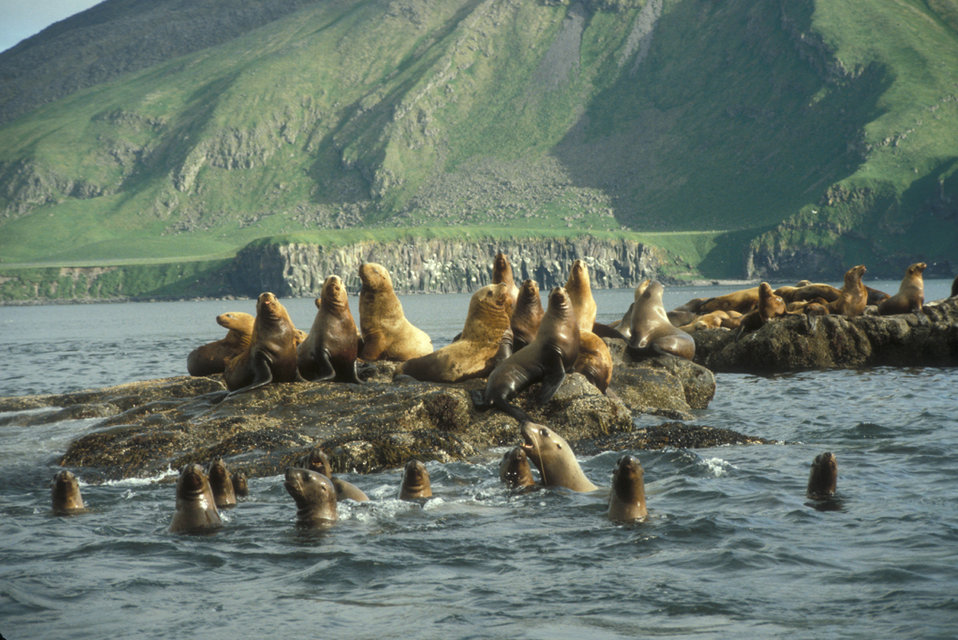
Sea Lion

Amak Island Steller sea lion haul out.